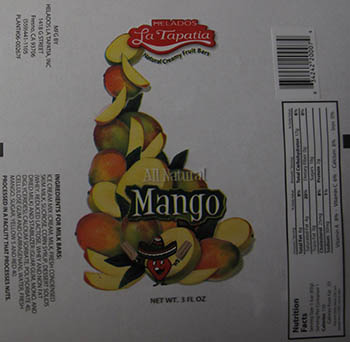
RECALLED – Ice cream products

March 19, 2014 – Product Recall – Helados La Tapatia, Inc. Recalls Products Because of Possible Health Risk.